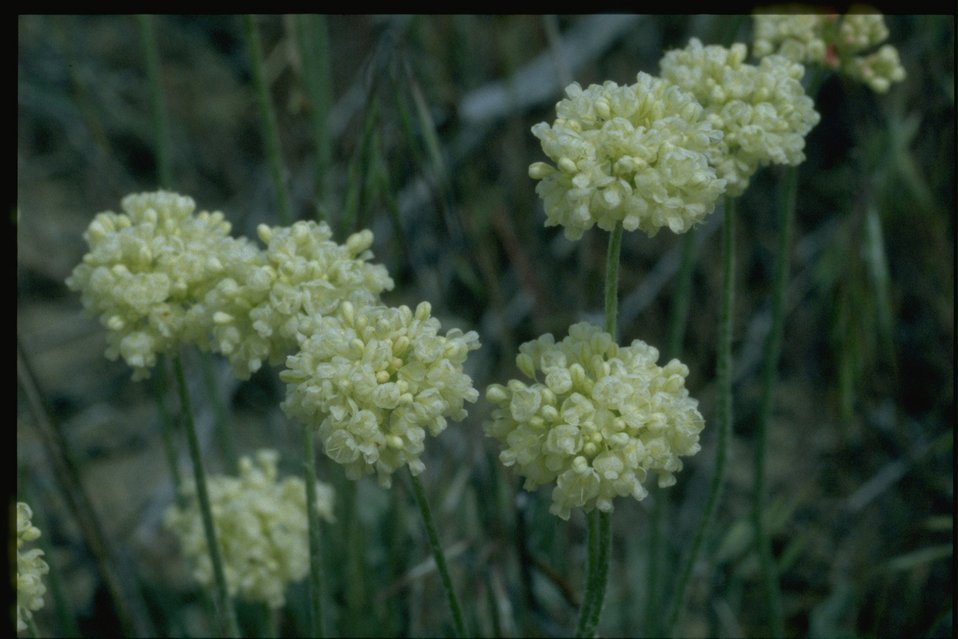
Closeup of Buckwheat wildflowers.